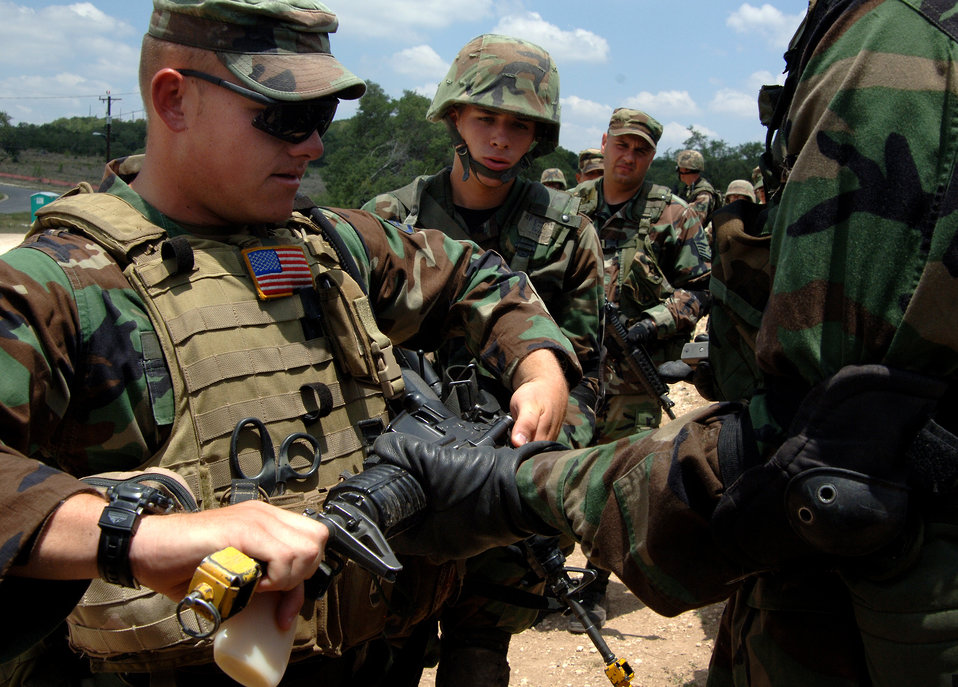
Experience a key training tool at Security Forces Academy

Staff Sgt. Brian Lunger, left, helps clear weapons for students during the Security Forces Academy training at Camp Bullis, Texas, on Wednesday, July 19. The 343rd Training Squadron instructs Airmen on air base defense and combat operations. Sergeant Lunger is an instructor and the NCO in charge of the military operations and urban training for the 343rd TRS.